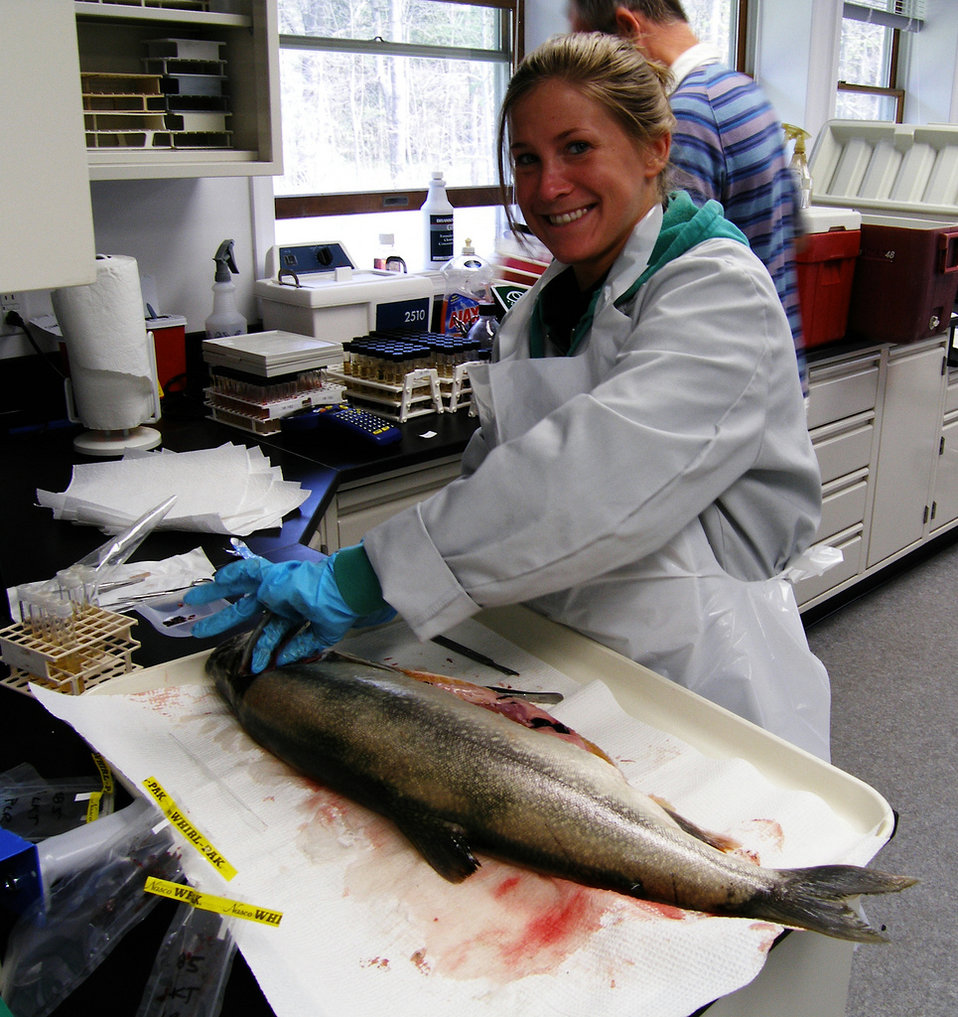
Necropsy

U.S. Fish and Wildlife Service